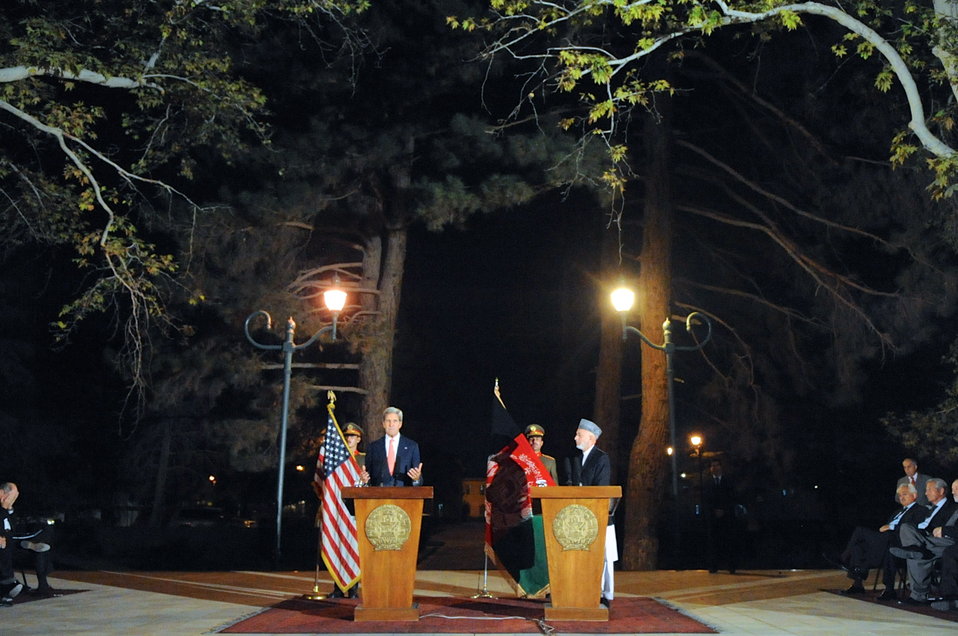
Secretary Kerry, Afghan President Karzai Hold News Conference

U.S. Secretary of State John Kerry and President Hamid Karzai discuss a Bilateral Security Agreement between the U.S. and Afghanistan during an outdoor news conference in Kabul, Afghanistan, on October 12, 2013. You can view Secretary Kerry's remarks here: www.state.gov/secretary/remarks/2013/10/215358.htm.